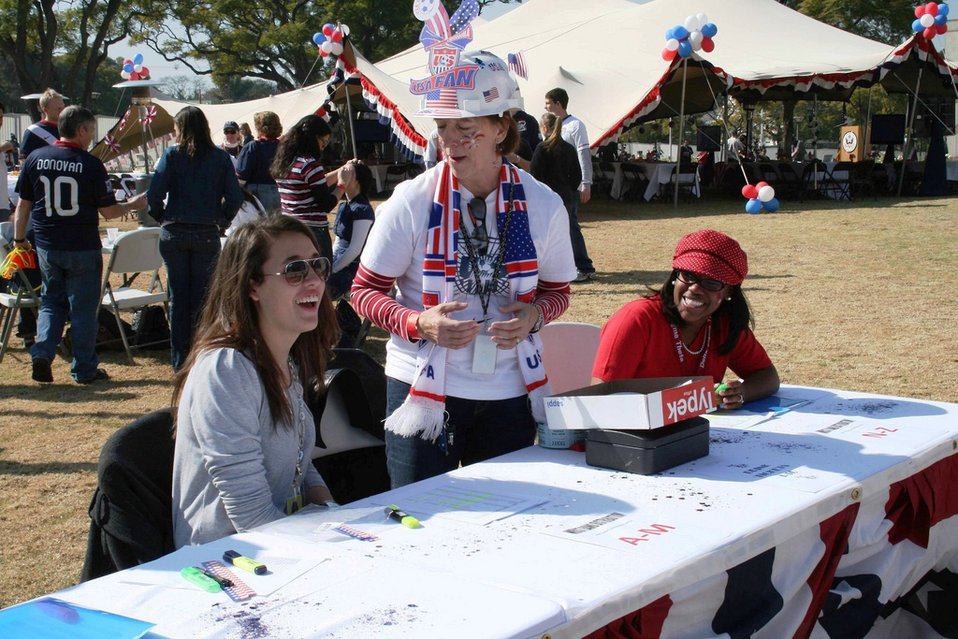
Fans Chat

Team USA fans chat at the Team USA pep rally before the U.S. vs. Algeria World Cup match on June 23, 2010, in Pretoria, South Africa.